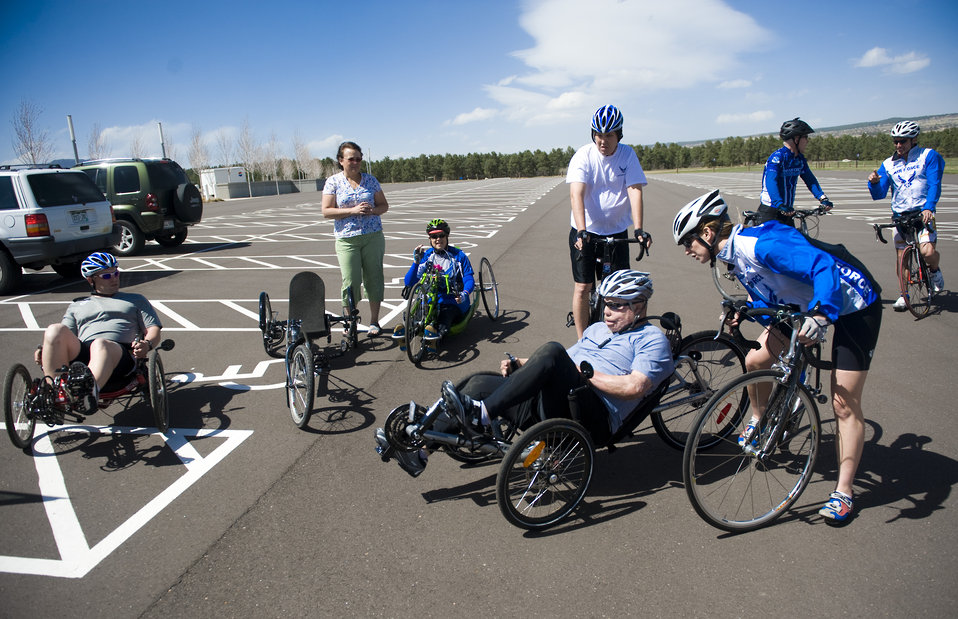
Warrior Games

The Air Force team begins their first cycle training session leading up to the Warrior Games, May 9, 2011, at the Air Force Academy. The Warrior Games help elevate abilities through athletic competition for wounded, ill, and injured service members by providing a focal event to empower the incorporation of athletics into military wounded warrior programs, the games run through May 16 – May 21.